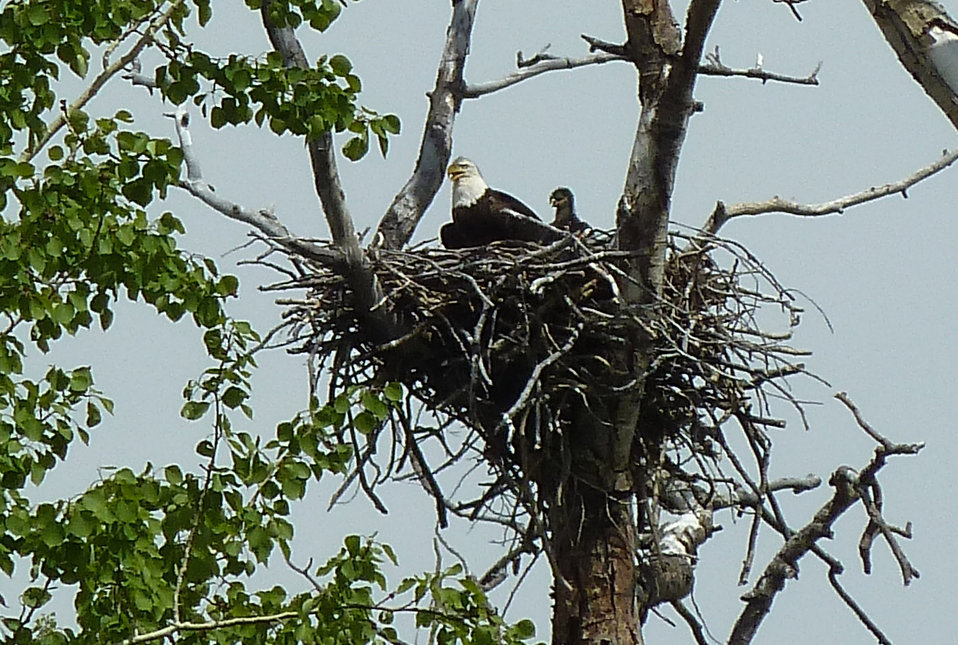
View from the Nest

This adult bald eagle and eaglet pair was spotted by two Refuge volunteers while doing field work on the National Elk Refuge.

Credit: USFWS / Betty Mulcahy, National Elk Refuge volunteer